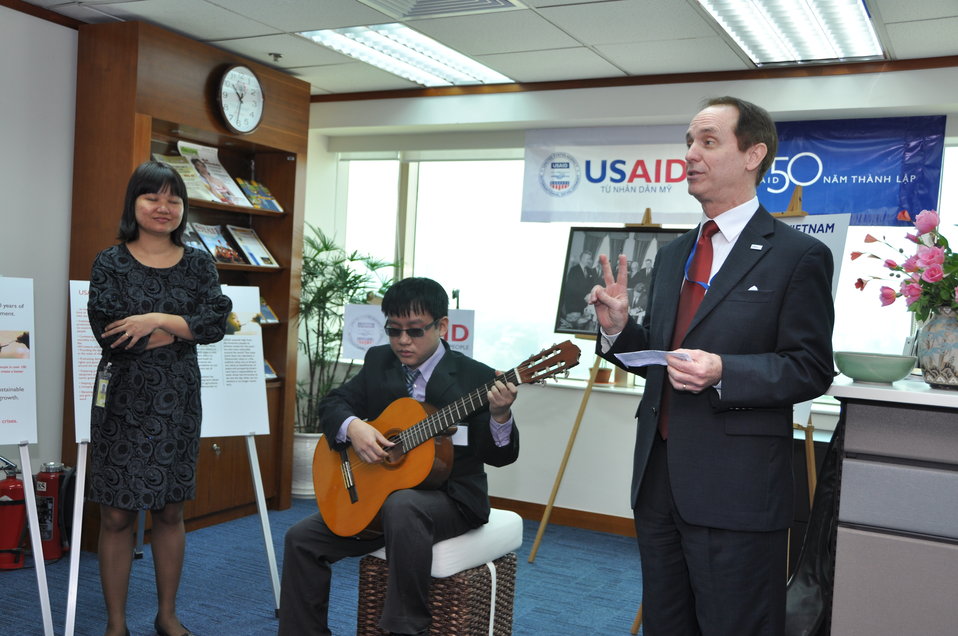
USAID 50th Anniversary Open House, USAID Vietnam